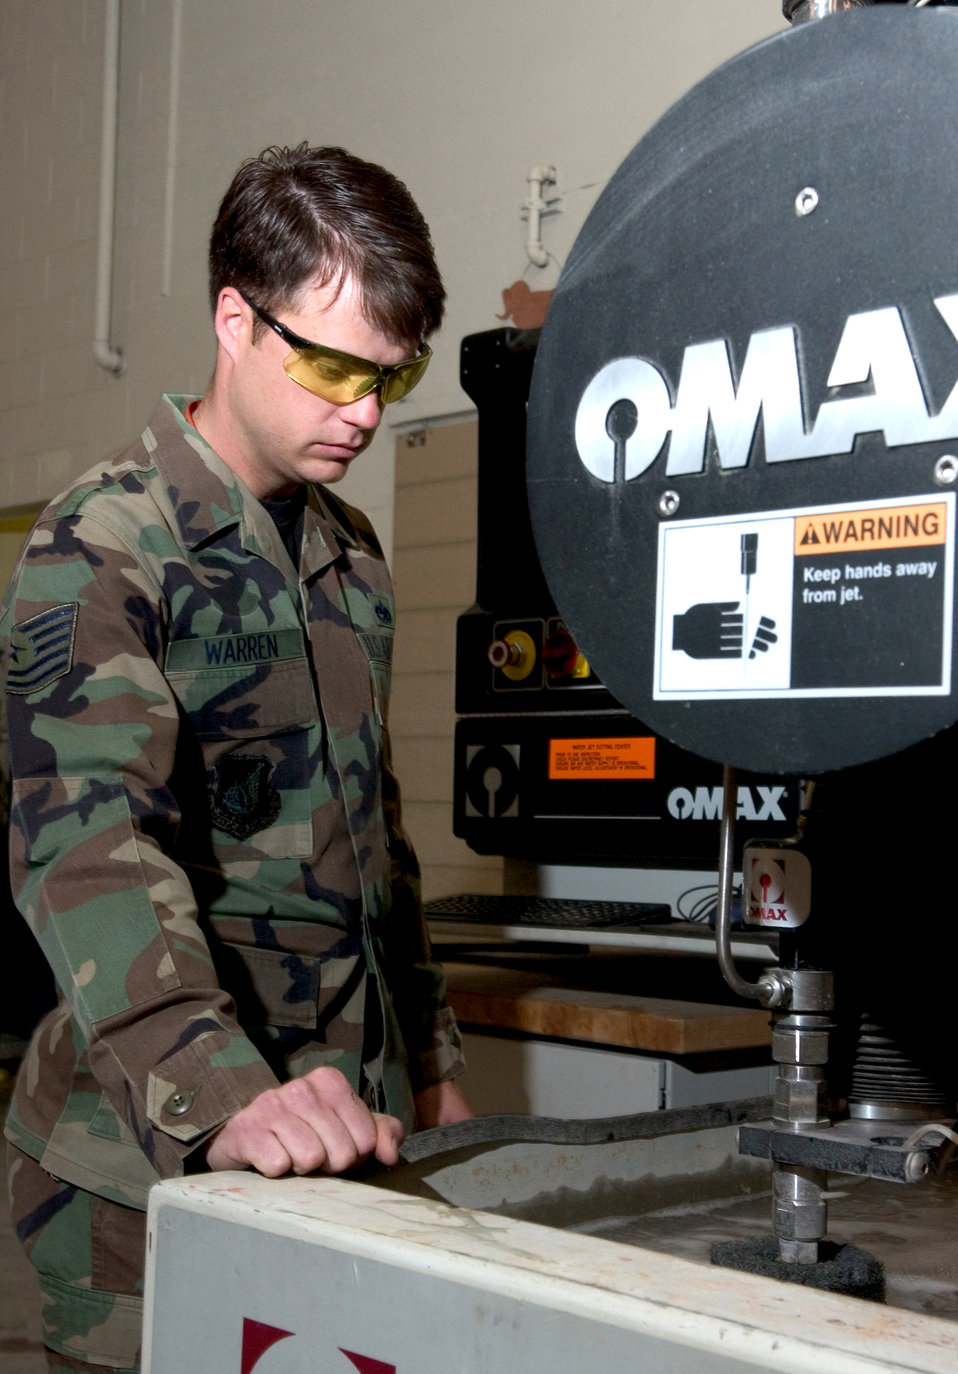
Technicians cut metal waste

Tech. Sgt. Albern Warren checks on the progress of an abrasive water-jet cutter while cutting metal for an aircraft part on Friday, June 16. Sergeant Warren is assigned to the 3rd Equipment Maintenance Squadron metals technology shop at Elmendorf Air Force Base, Alaska.